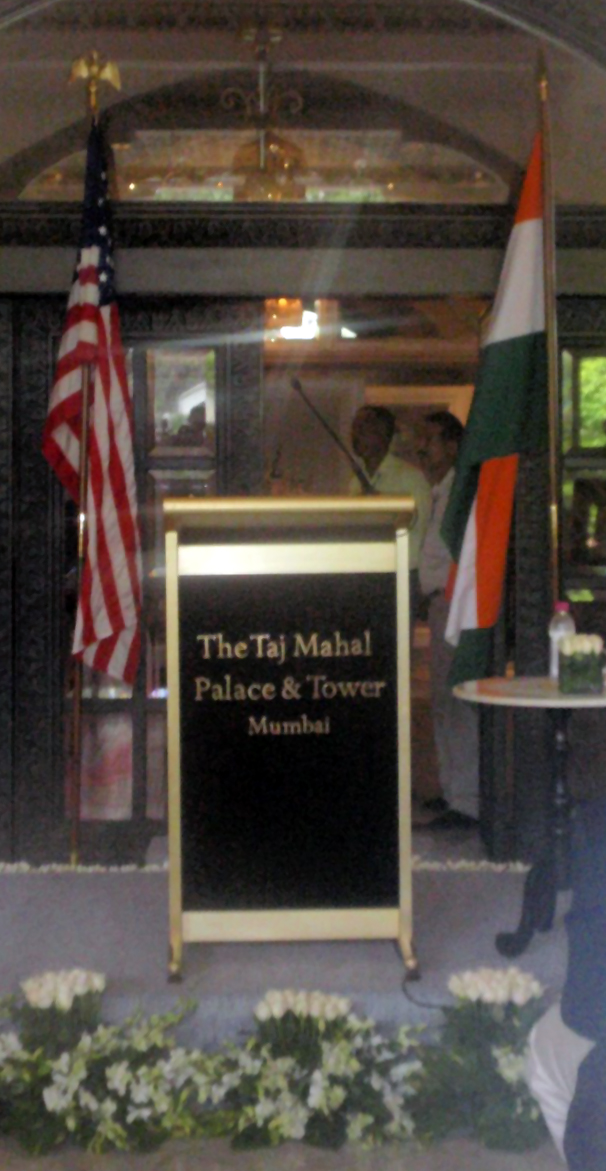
Behind the Scenes: Taj Mahal Palace and Tower

The podium as prepared for U.S. Secretary of State Hillary Rodham Clinton's Press Availability at the Taj Mahal Palace and Tower in Mumbai, India July 18, 2009.